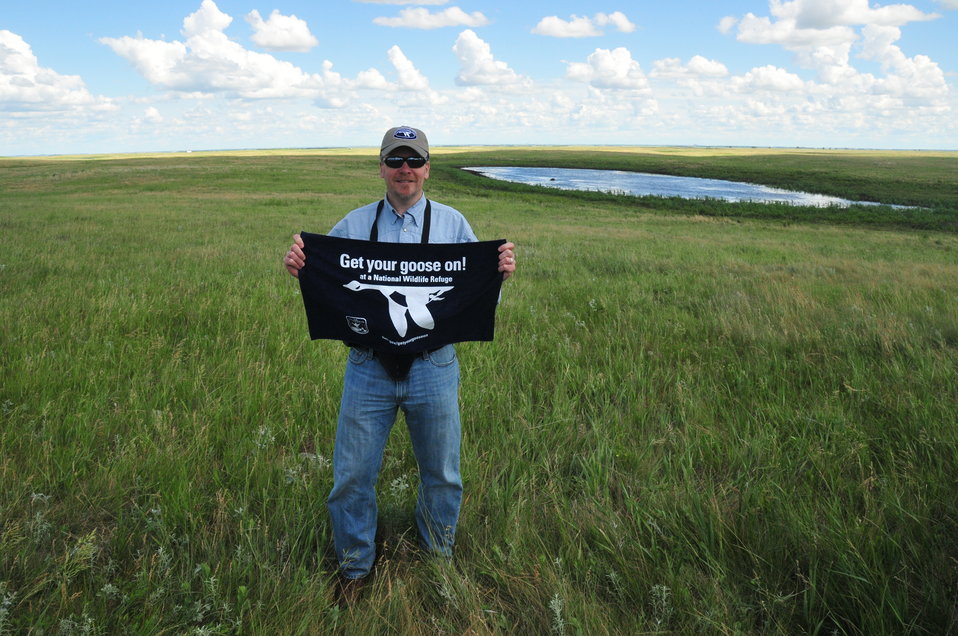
Get Your Goose On!

The national meeting for regional chiefs of the National Wildlife Refuge System is held three times a year in different locations around the country. This 2012 meeting took place in McPherson County, South Dakota, and focused on the Dakota Grassland Conservation Area.

This photo was taken on the Wade Weiszharr and Family Ranch, which contains perpetual U.S. Fish and Widlife grassland and wetland easements. This site is also located in the heart of Prairie Pothole Region, making it extremely productive migratory bird habitat and a great place to “Get your goose on!”

In this photo Matt Hogan, Refuge Chief of Region 6, 'gets his goose on' and showcases the unique grasslands and wetlands found on the Wade Weiszharr Family Ranch!